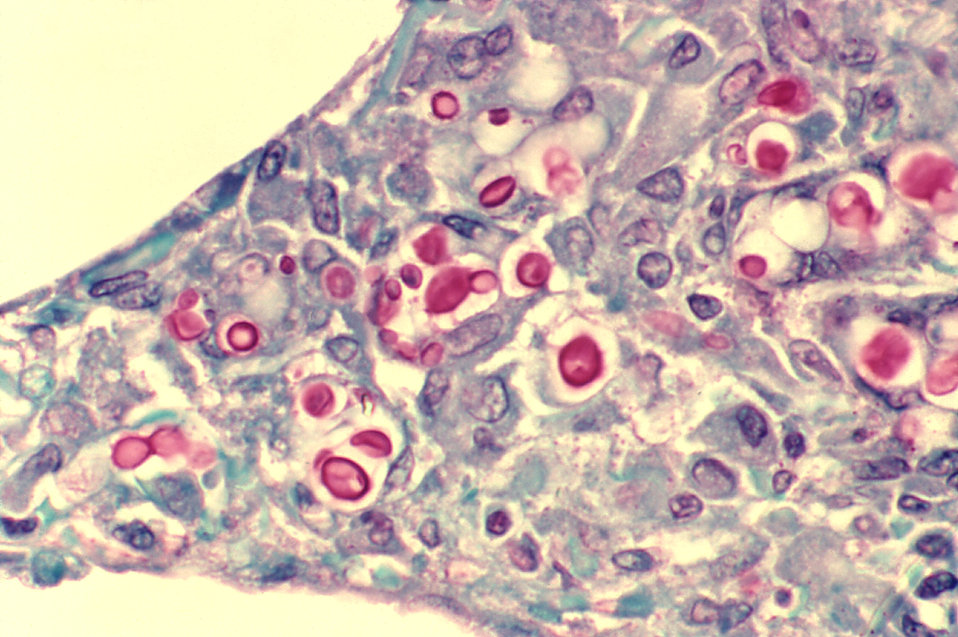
Cryptococcosis of lung in patient with AIDS. Mucicarmine stain.